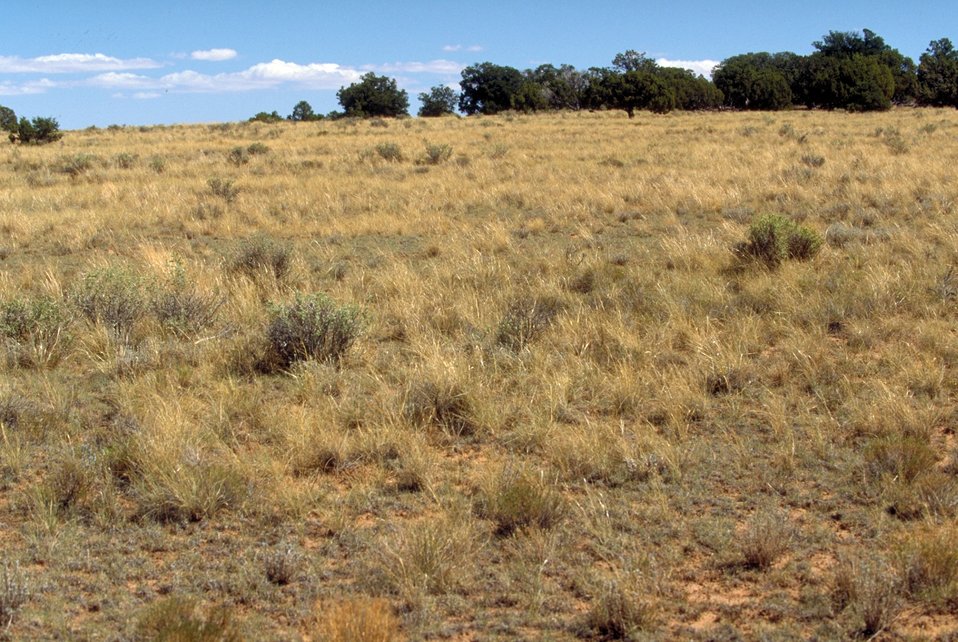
Rangelands on the San Rafael Swell.